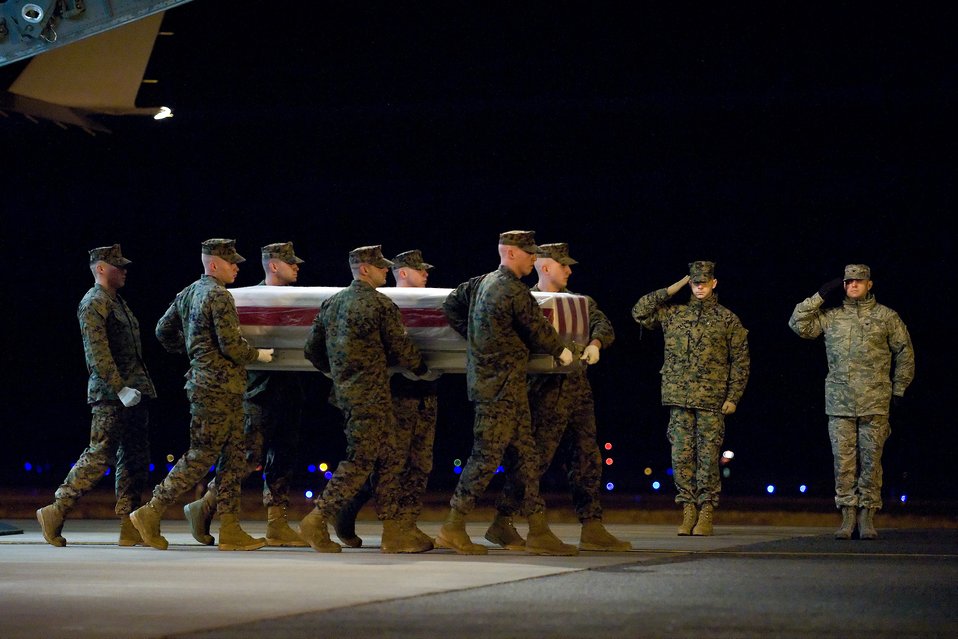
Dover colonels perform sacred duty

Col. Anthony Krawietz (right) serves as the dignified transfer host Feb. 7, 2011, for Marine Cpl. Lucas T. Pyeatt of West Chester, Ohio. Colonel Krawietz, the 436th Airlift Wing vice commander, is one of nine colonels assigned to Dover Air Force Base, Del., who share the duty.